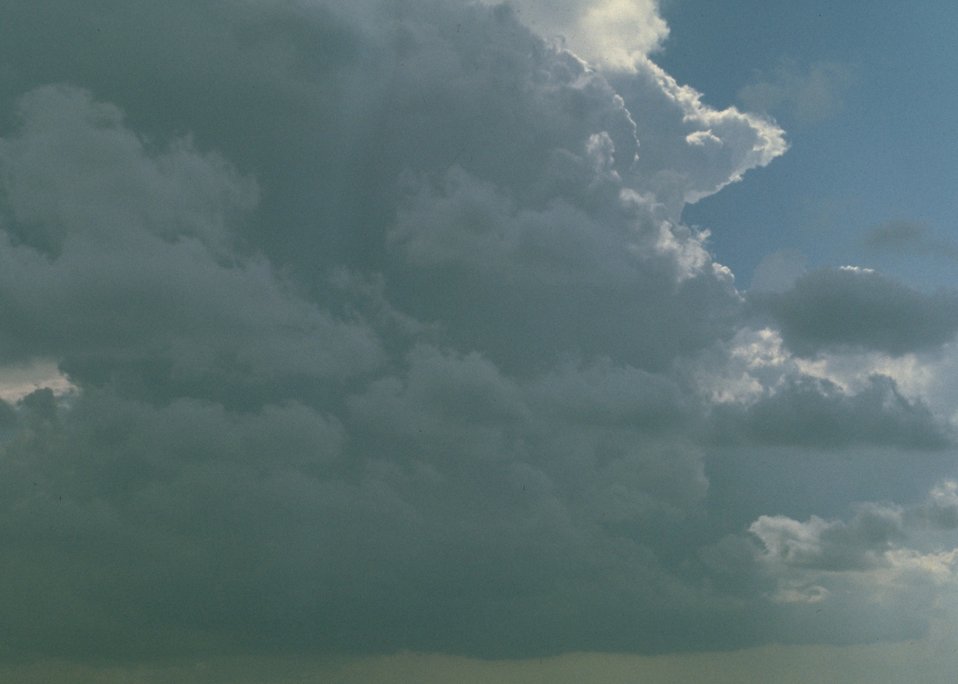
Dark cloudy sky.